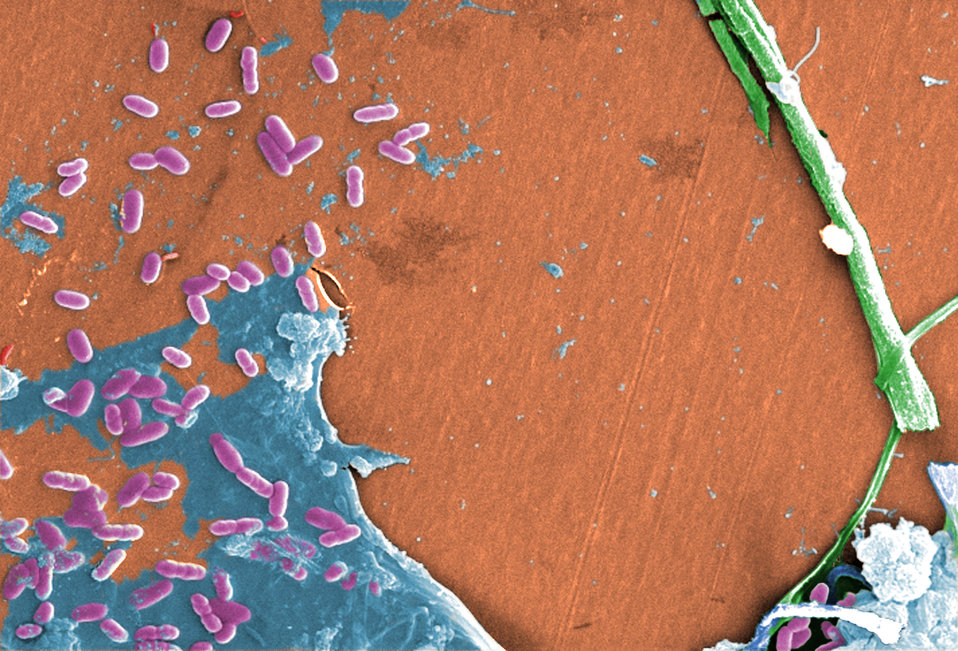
This digitally-colorized scanning electron micrograph (SEM) of an untreated water specimen extracted from a wild stream mainly used to control flooding during inclement weather, revealed the presence of unidentified organisms, which included bacteria, protozoa, and algae. In this particular view, a mass of gelatinous biofilm had enmeshed numbers of microorganisms, including amoebae and bacteria. Note at right, the stalk of what is suspected to be an algal specie.